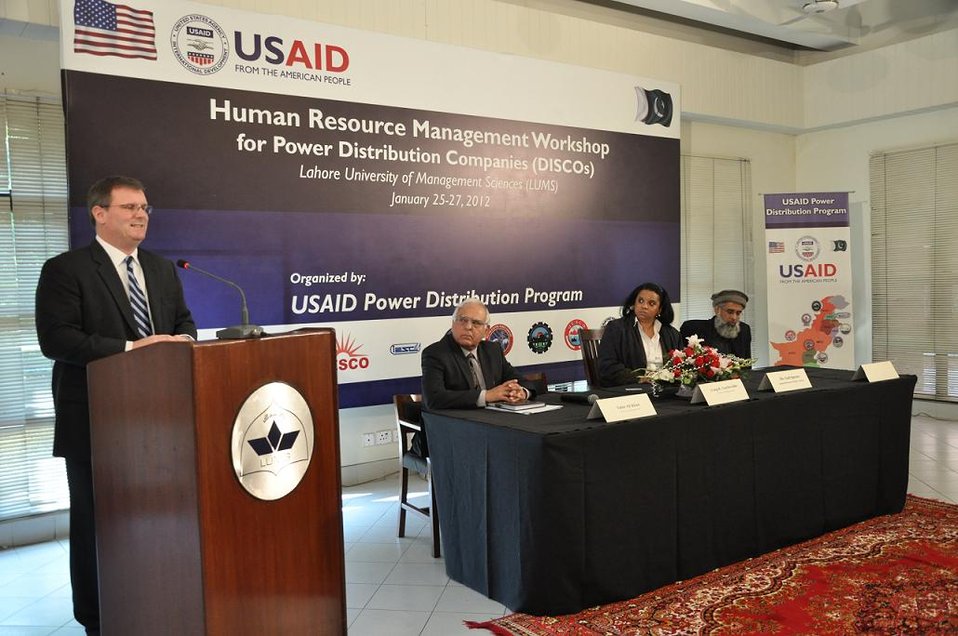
Distinguished guests